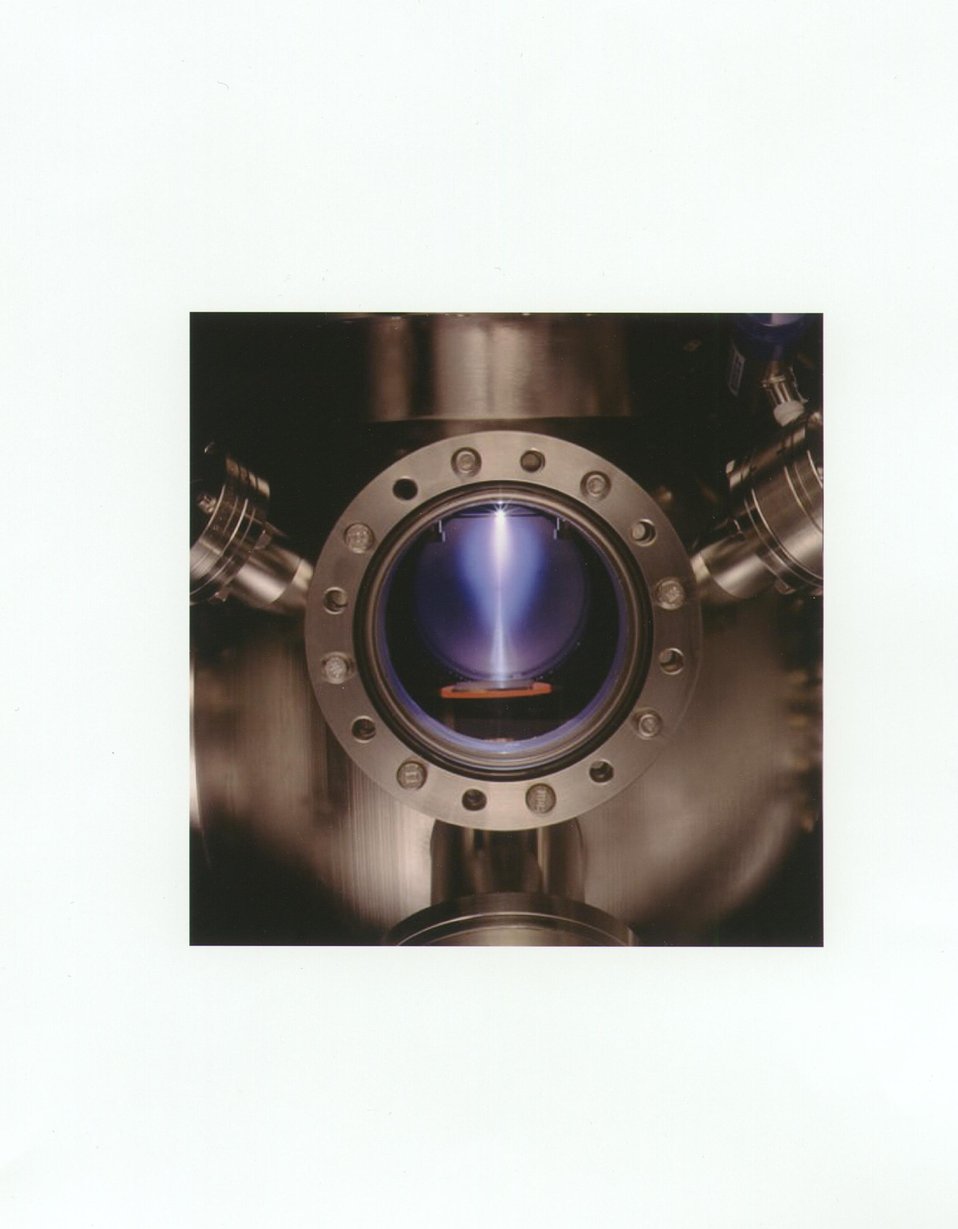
NREL customized pulsed laser deposition chamber.

Because of their great potential as a means of storing, transmitting and distributing electricity, high-temperature superconducting materials, systems, and components are an important area of R&D in NREL's Center for Basic Sciences. Extremely high quality films of high temperature superconductivity are grown in NREL's customized chamber. Superconducting wires of the future will be capable of carrying a large amount of electricity in a very efficient manner.